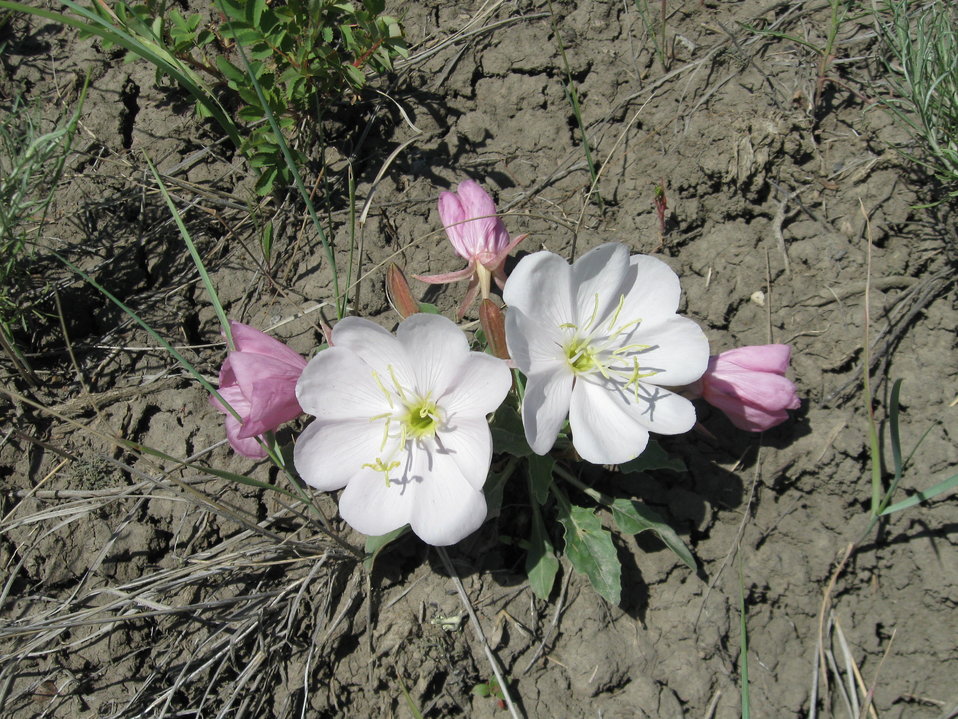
Gumbo Lily

This beautiful flower (Oenothera caespitosa) grows in very poor, hard pan, 'gumbo' soils in badlands and sandhills. It is also known as alkali lily and tufted evening primrose.